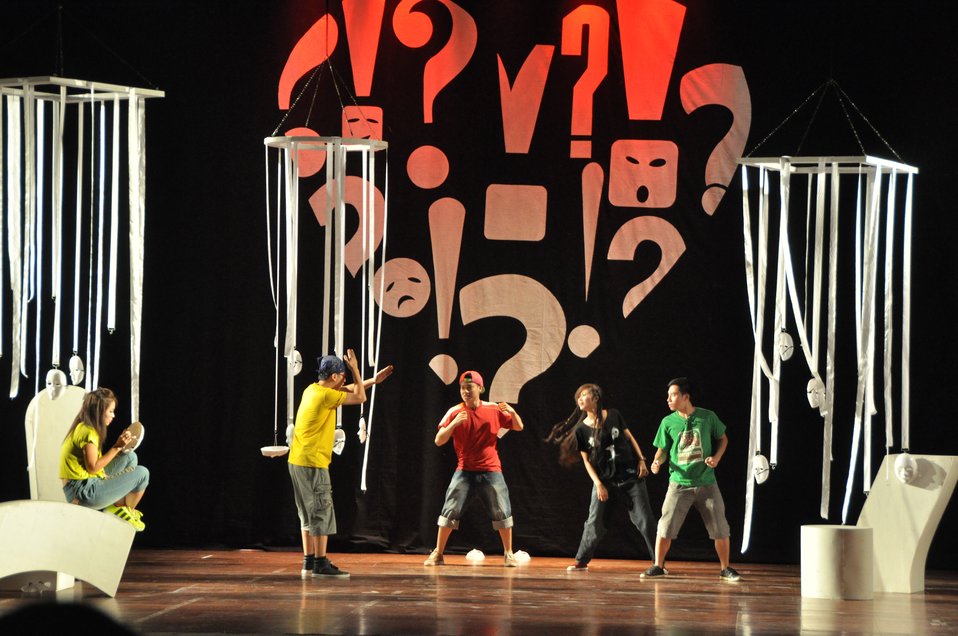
PEPFAR Musical Questions and Exclamations

Hanoi, May 17, 2013